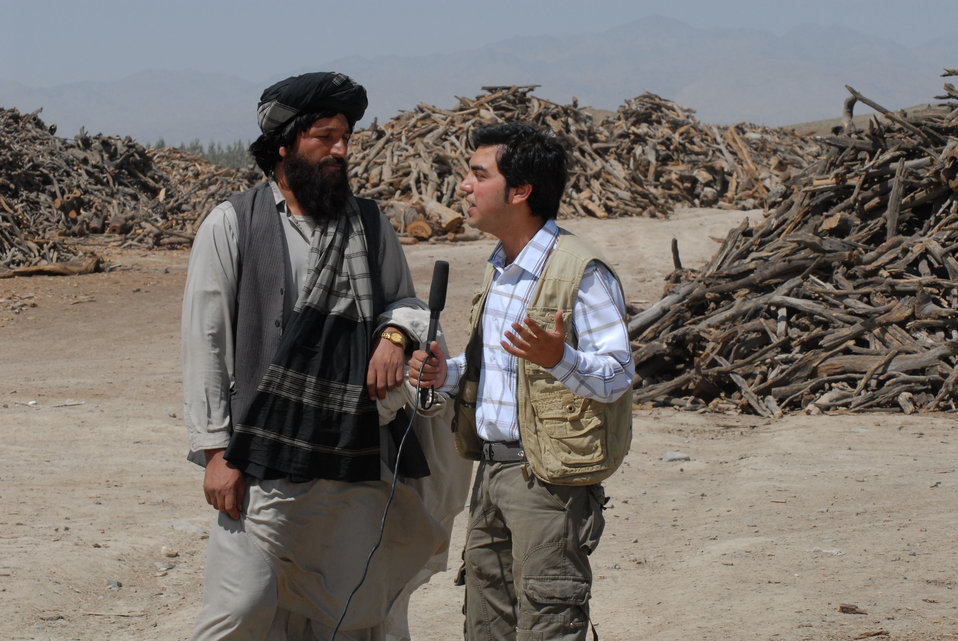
'On the Road' in Paktya Province